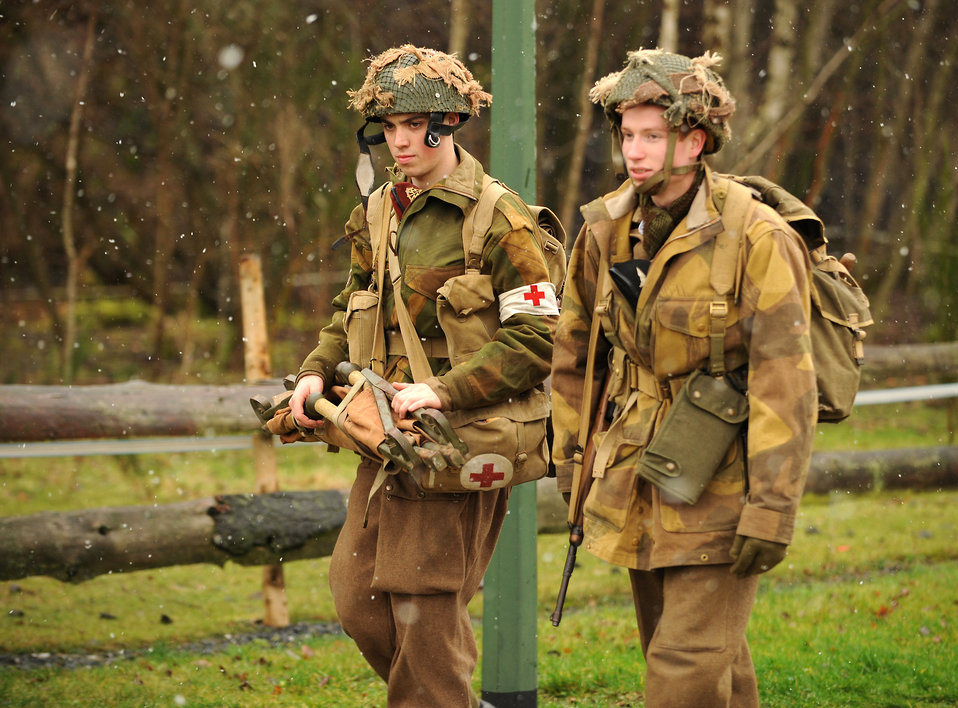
Airmen participate in 32nd Annual Bastogne Historic Walk

World War II re-enactors walk along a trail Dec. 12, 2009, during the 32nd Bastogne Historic Walk here in Bastogne, Belguim. Despite the snow and cold, more than 4,500 people from across Europe and the world participated in the event.